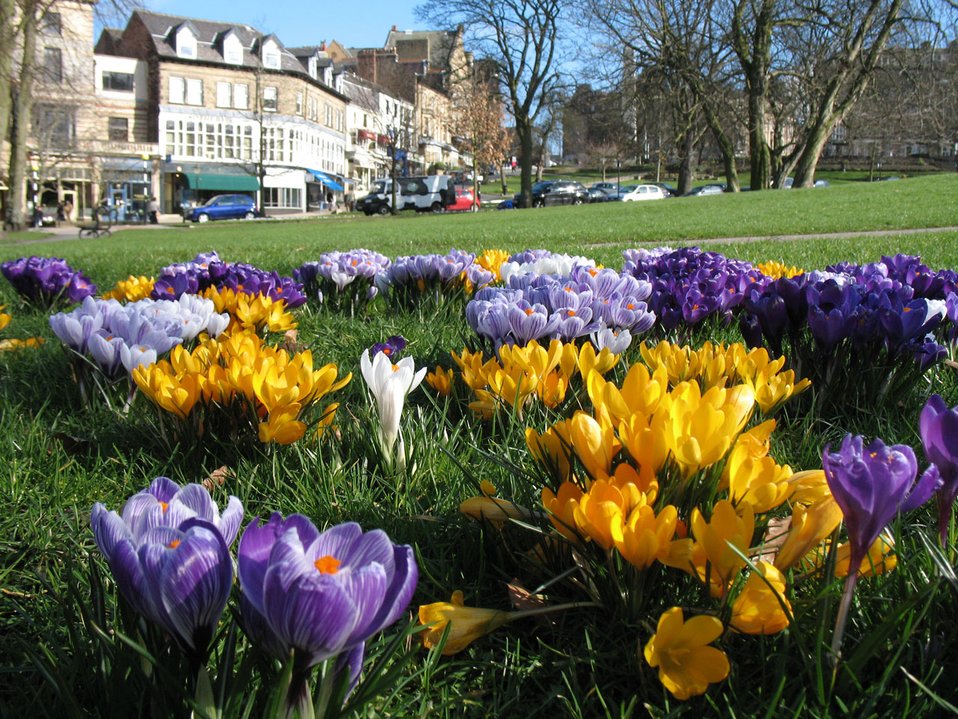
Crocuses in park

Close up photo of crocuses in park with some buildings in background.